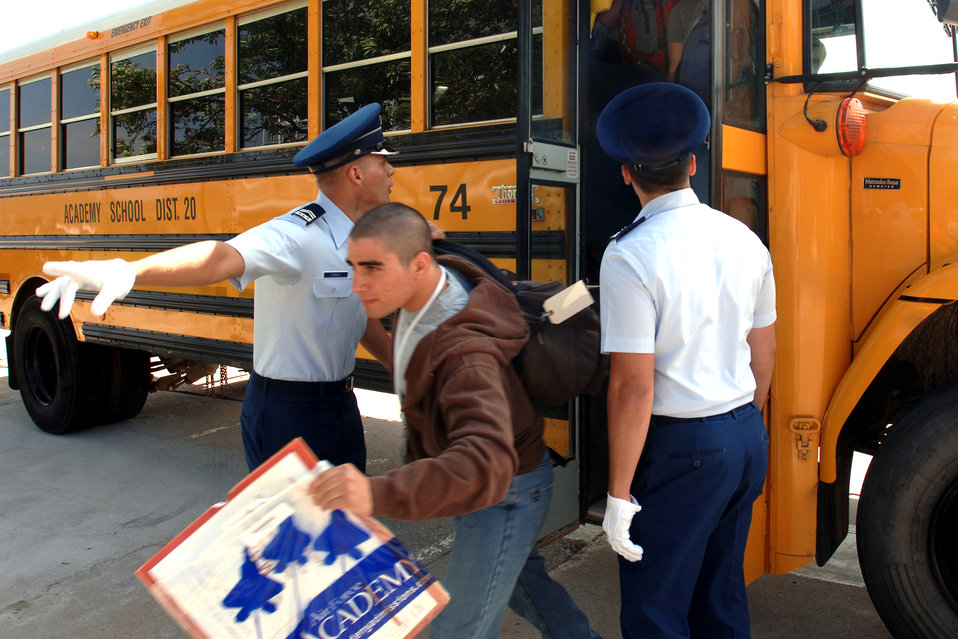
Welcome to the Air Force

Basic cadet trainees exit the bus as they begin inprocessing as the Class of 2011 June 28 at the U.S. Air Force Academy in Colorado. The 1,304 members of the U.S. Air Force Academy's Class of 2011 arrived to in-process and begin basic cadet training here.